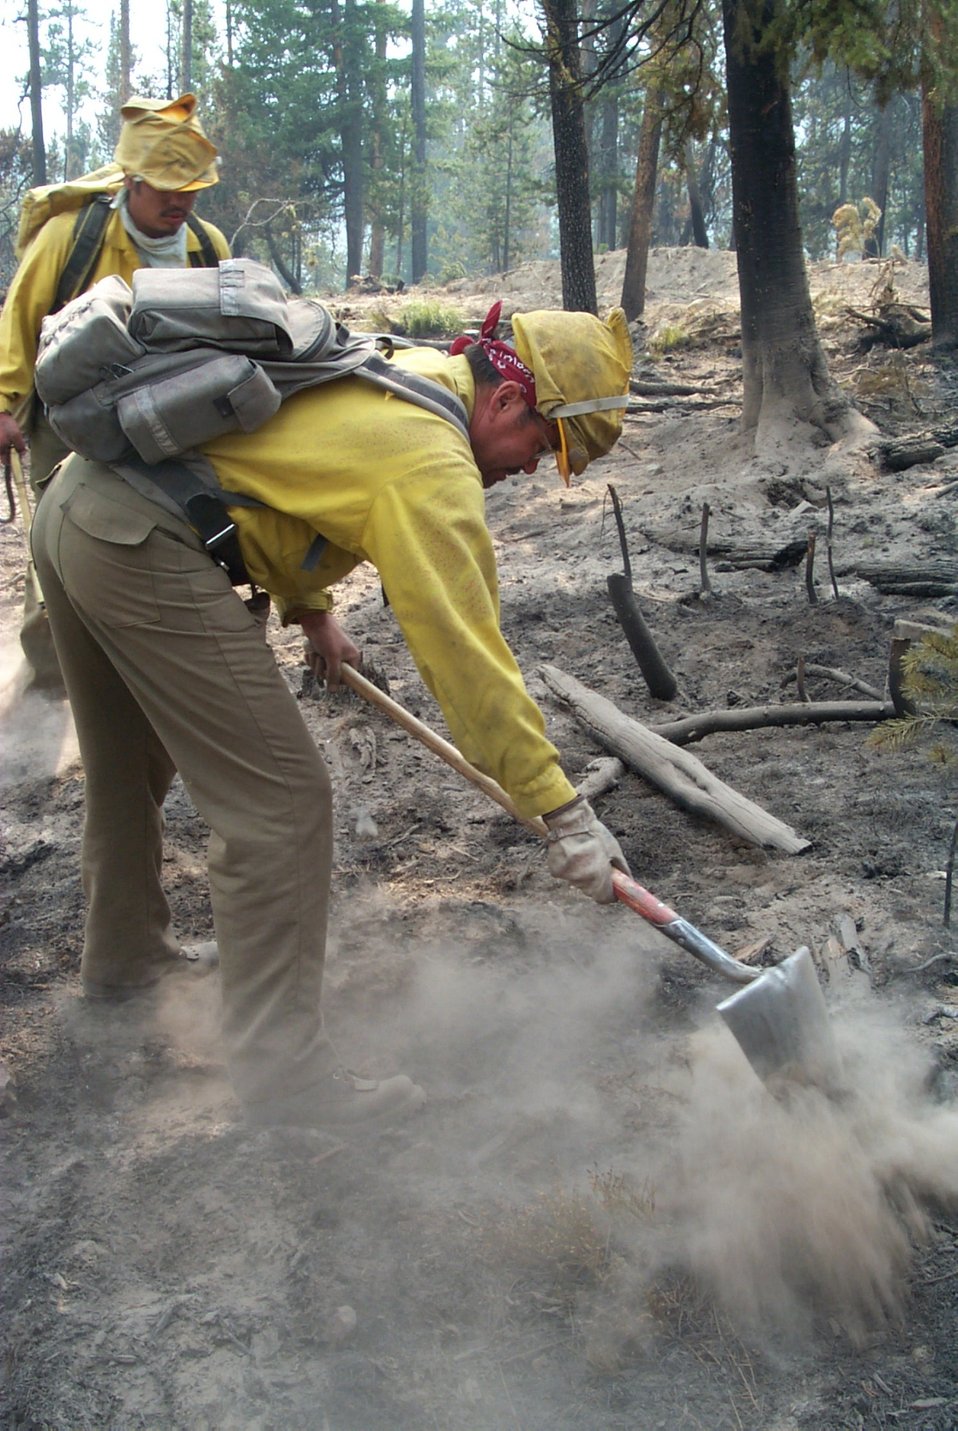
Fire crew Fire Clearwater Fire Salmon Field Office USRD Upper Snake River District